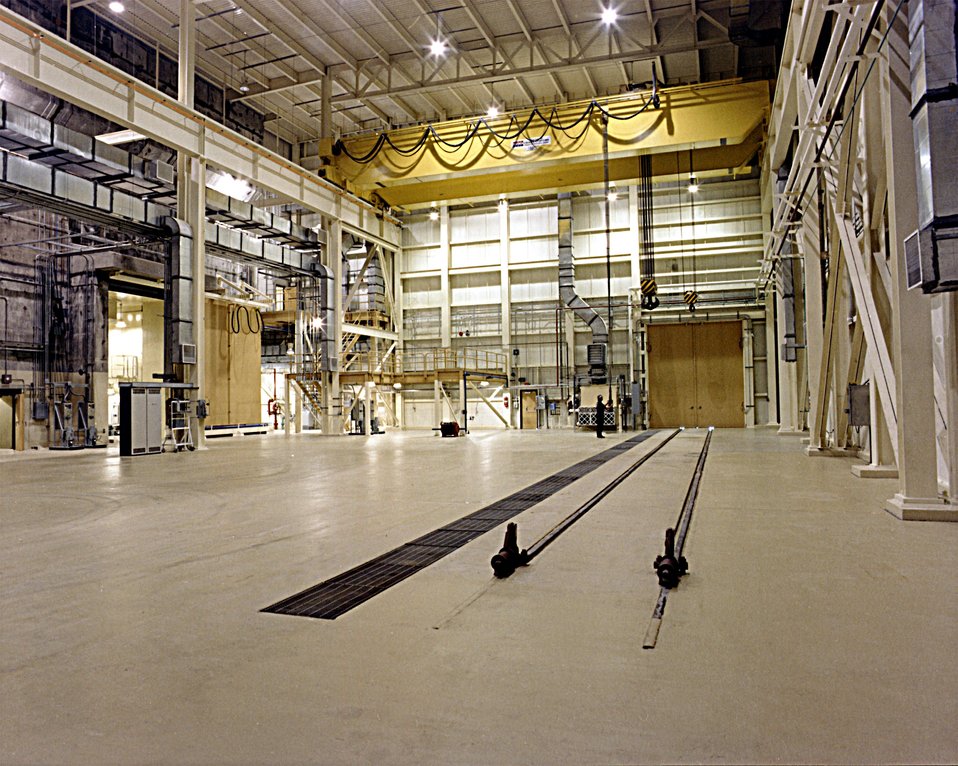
REMOTE HANDLING HIGH BAY AREA IN THE WASTE HANDLING BUILDING.

THE WASTE ISOLATION PILOT PLANT IS A DOE RESEARCH AND DEVELOPMENT FACILITY FOR DEMONSTRATING THE SAFE DISPOSAL OF TRANSURANIC RADIOACTIVE WASTES. TEST SHAFTS HAVE BEEN DRILLED TO A DEPTH OF 2,100 FEET. THE SHAFTS, ONE 6 FEET IN DIAMETER AND THE OTHER 12 FEET IN DIAMETER, PROVIDE AN ENTRY PASSAGE AND VENTILATION TO THE UNDERGROUND SALT ROCK FORMATION THAT IS BEING TESTED TO DETERMINE ITS SUITABILITY FOR RADIOACTIVE WASTE STORAGE.